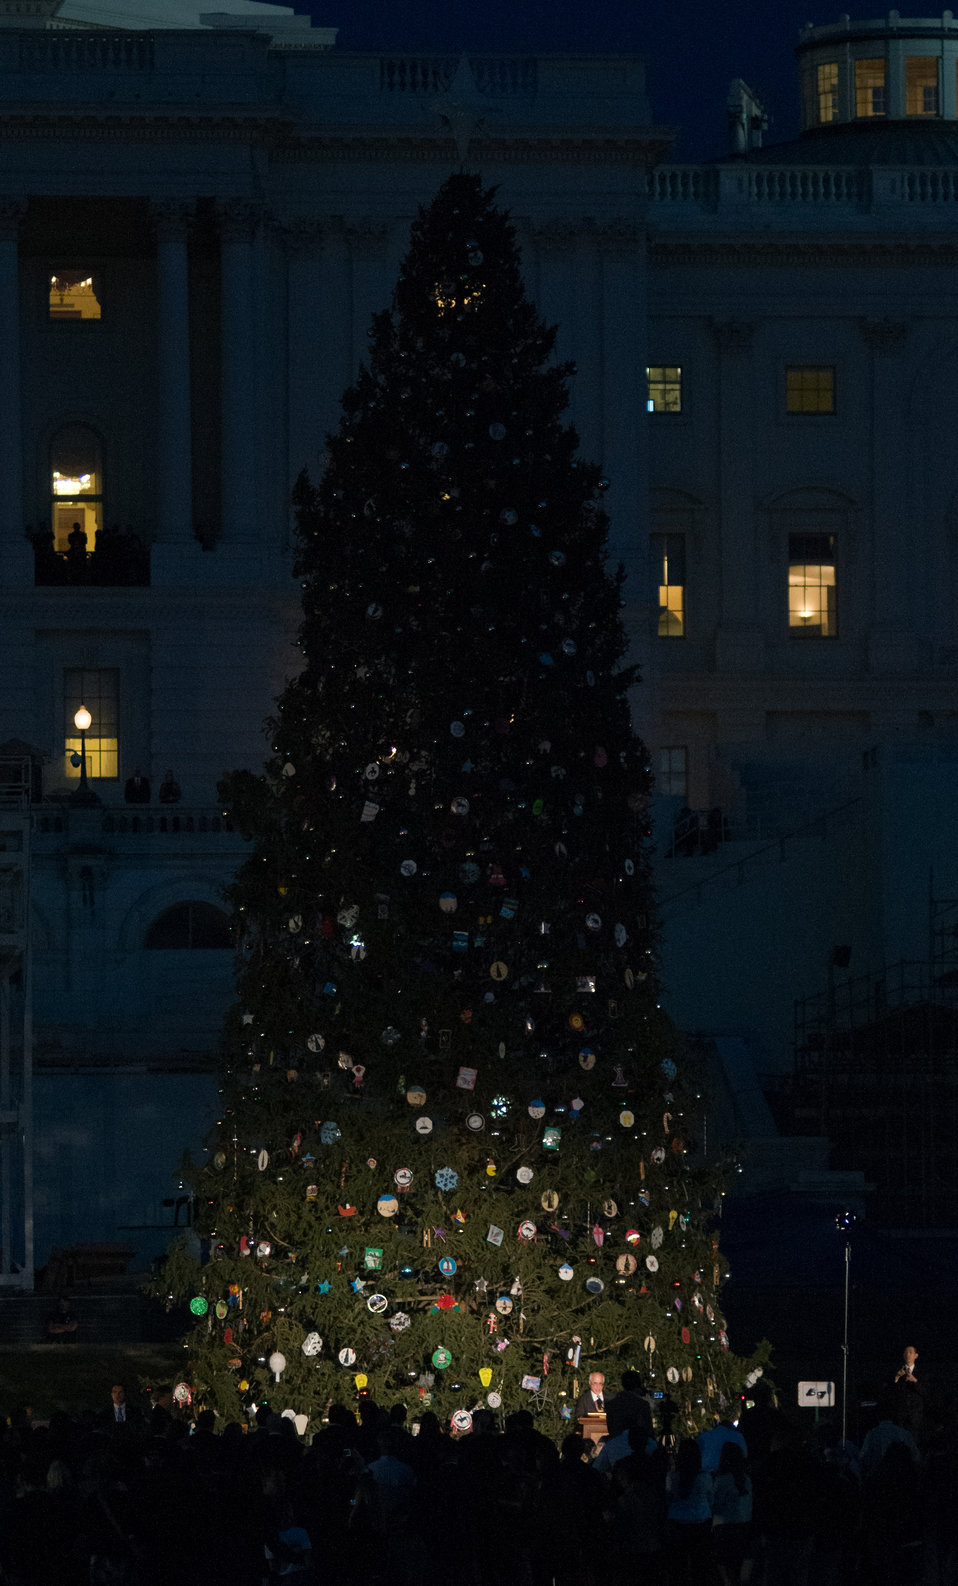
U.S. Department of Agriculture (USDA) Natural Resources and Environment Under Secretary Harris Sherman spoke spoke shortly before the lights of the 2012 U.S. Capitol Christmas Tree from the Blanco Ranger District of the White River National Forest near Meeker, Colorado; and decorated with hand-made ornaments, was switched on by Colorado Springs high school student Ryan Shuster and House Speaker John Boehner, on Tuesday, Dec. 4, 2012. Since November, the tree visited dozens of cities across the country as it made its way here on Nov.26, 2012. The 73-foot Englemann spruce traveled from the White River National Forest in Colorado.